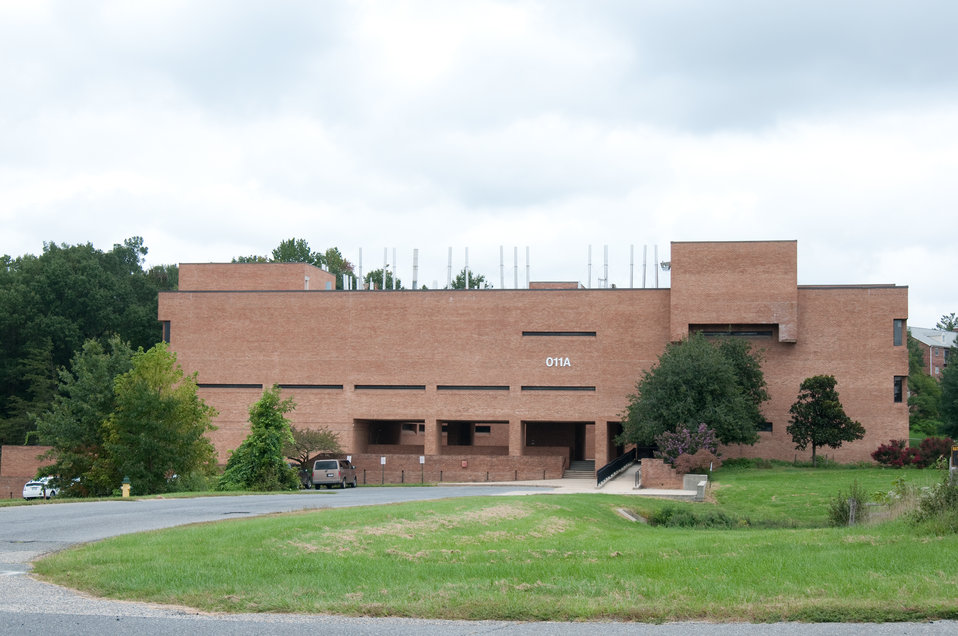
United States Department of Agriculture, Beltsville Agricultural Research Center, Bioscience Research facility (Building 011A,) in Beltsville, MD, on Wednesday, September 21, 2011.